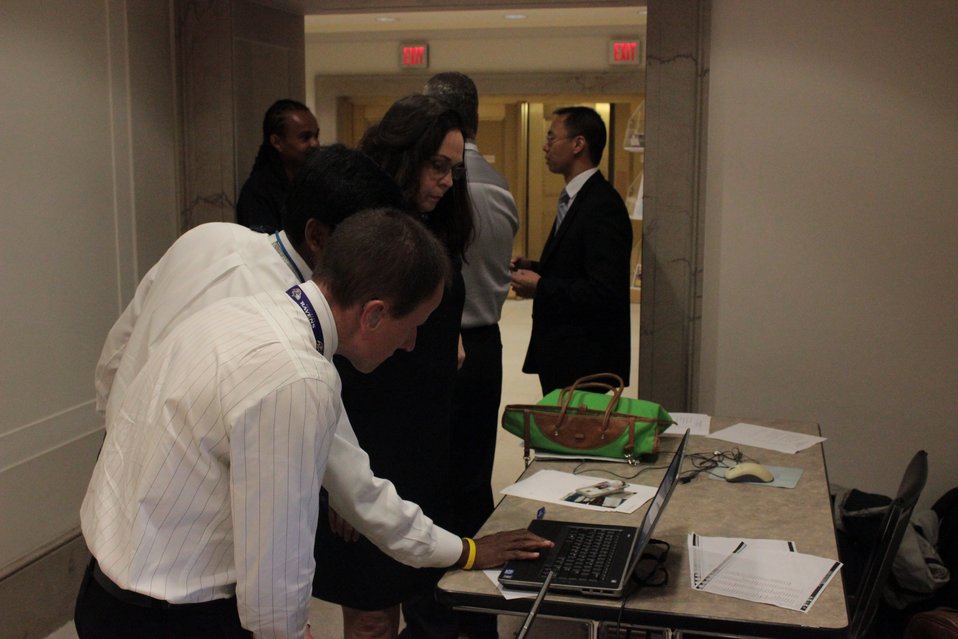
Office of the Federal Register IS&T staff Steve Frattini, Krishnakumar Sambandham, Lee Powell, and Aaron Woo speaking to agency liaisons about digital submissions and the Federal Register; Location: Archives 1 - McGowan Theater Lobby, Washington, D.C.